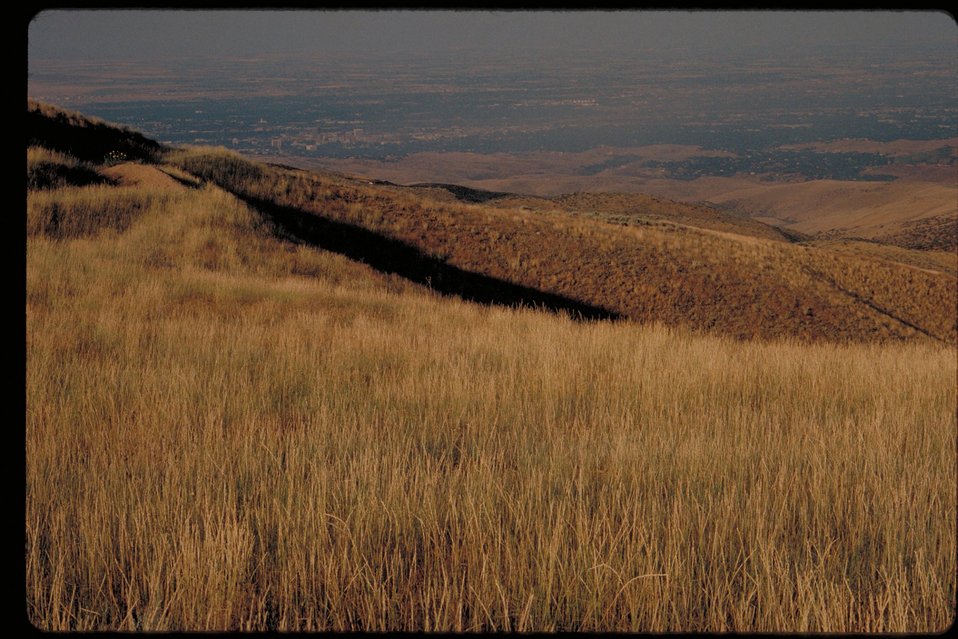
Fire Rehab Boise Front Four Rivers Field Office LSRD Lower Snake River District